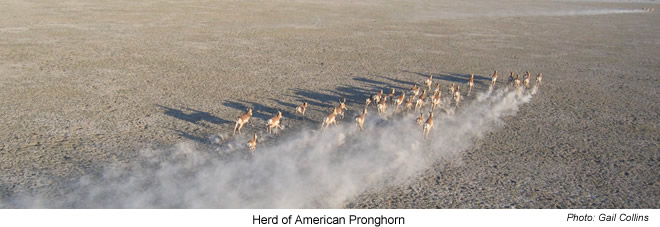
Herd of American Pronghorn - Hart MT National Antelope Refuge

The 278,000-acre refuge is one of the most expansive wildlife habitats in the arid West free of domestic livestock.